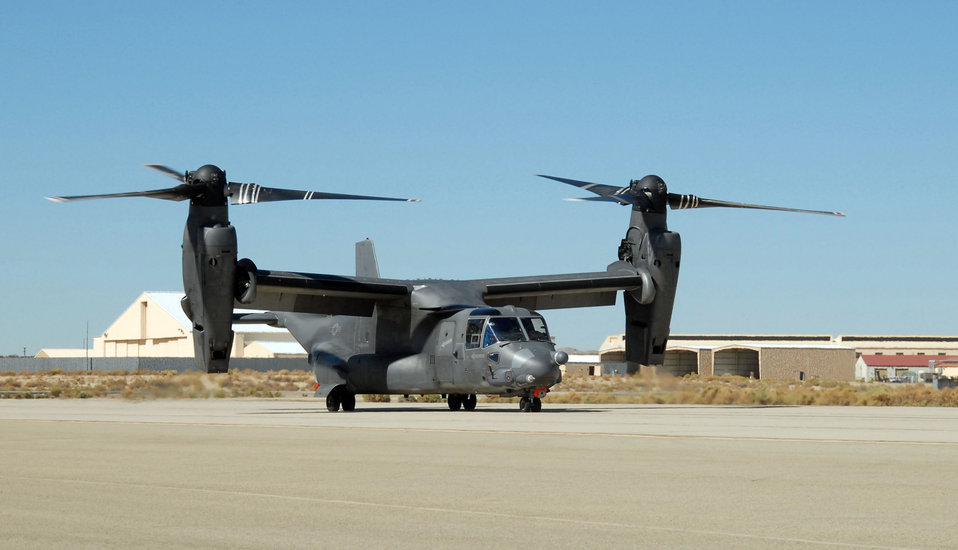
CV-22 Osprey prepares to take off

A CV-22 Osprey prepares to take off on the Edwards Air Force Base, Calif., flightline. The CV-22 Integrated Test Team concluded developmental testing Sept. 26, 2007. The CV-22 program is now moving to the operational test phase, which will continue at Hurlburt Field, Fla., in October.